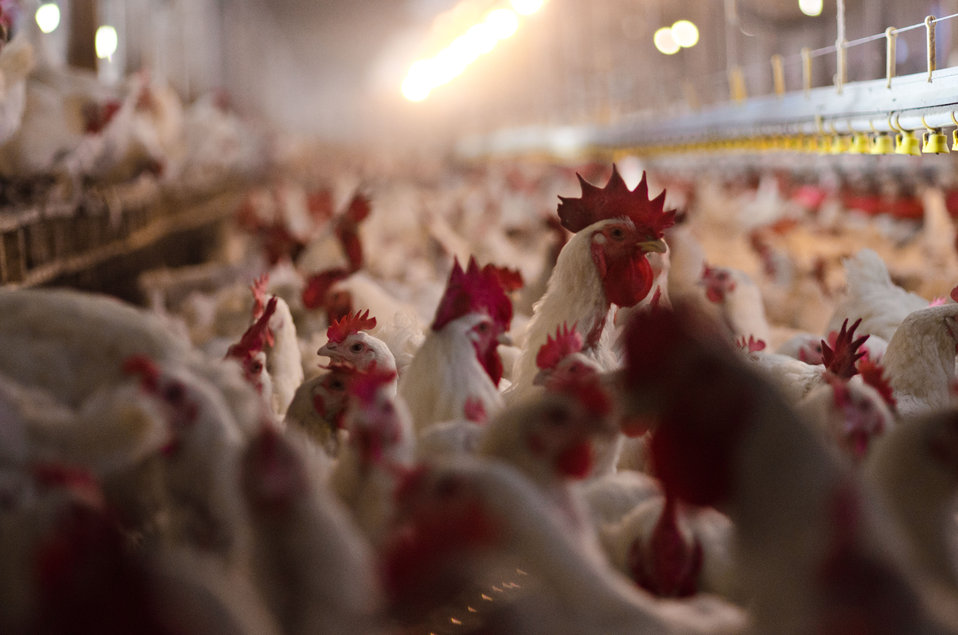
Some of the 17,000 poultry at Seldom Rest Farms located, north of Myerstown, PA, on Wednesday, April 20, 2011. The chickens are kept in a two story chicken house and produce approximately 2.5 million chicks each year. To supplement their electrical needs, they chose a contractor who knew about United States Department of Agriculture (USDA) Rural Energy for America program (REAP) grants and helped them through the application process. The farm was awarded a $152,000 grant (25% of the cost). to install the 1001kW solar array to power their farm, a neighboring farm and homes on the local electrical grid. The 240 solar panels were ground mounted with 5-foot clearance underneath to allow sheep to graze and rest underneath protected from the rain, sun or snowfall. Ten inverters change the DC electrical energy from the panels into AC energy that goes into the local power grid. Spring statistics show it is producing more than expected. REAP offers grants and/or loan guarantees for the purchase and installation of renewable energy generating systems and for energy efficiency improvements.